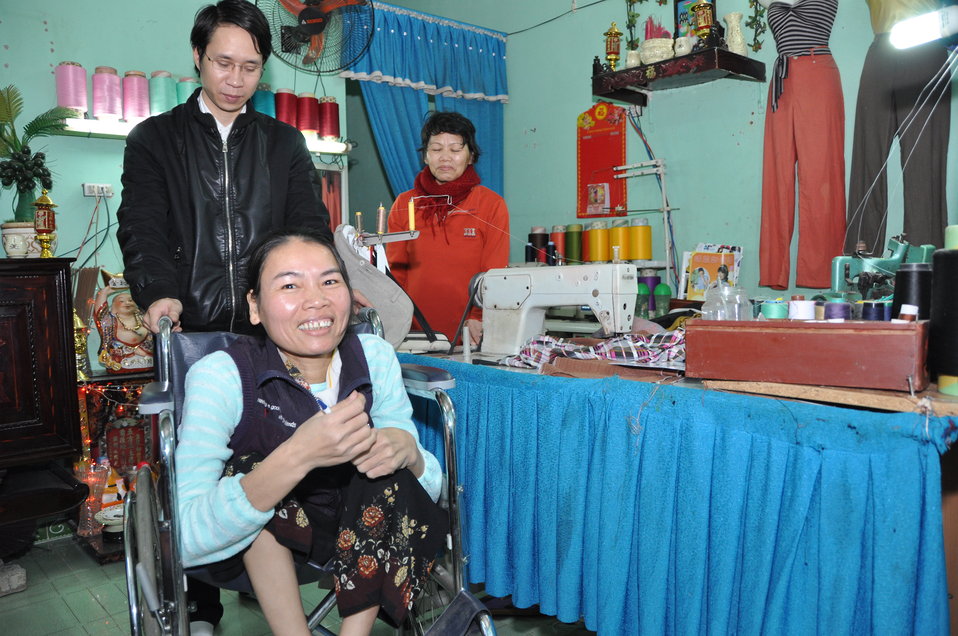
Le Thi Het receives support to boost her income from sewing.

Ms. Le Thi Het received a USAID funded wheelchair and regular physical therapy services as part of a three-year project in Danang.